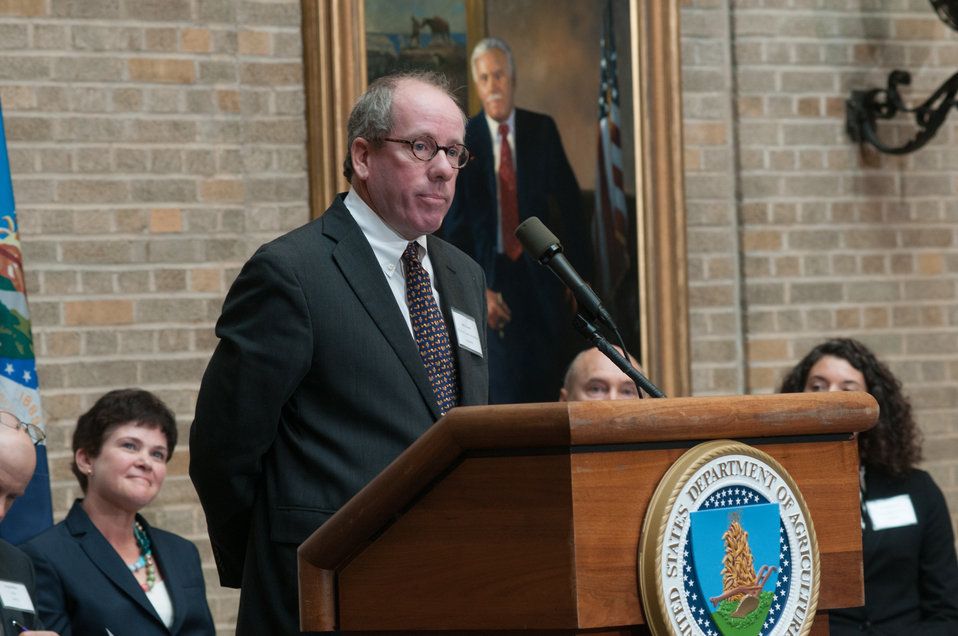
Biomass Power Association President and CEO Bob Cleaves speaks during the U.S. Department of Agriculture (USDA) Wood Energy Memorandum of Understanding, and awarded wood energy grants announcements event, at the USDA Headquarters, in Washington, D.C., on Wednesday, September 11, 2013. Signing the MOU are partnership leaders Biomass Thermal Energy Council, Executive Director Joseph Seymour; Alliance for Green Heat, President John Ackerly, USDA Agriculture Deputy Secretary Krysta Harden; Pellet Fuels Institute Executive, Director Jennifer Hedrick; Biomass Power Association, President and CEO Bob Cleaves, and Secretary Thomas Vilsack who signed it earlier. Moderating the event is Under Secretary for Rural Development Doug O’Brien.
The partnership agreement focuses on promoting wood energy nationwide as a means to address fire risks, bolster rural economic development, improve air quality, and help meet the Obama Administration’s renewable energy and energy efficiency goals. These organizations support the use of wood energy across the scale of users – from residential users, to commercial and intuitional facilities, to industrial production of heat and or electricity to drive businesses and feed the electrical grid.
Under the terms of the five grants announced by Deputy Secretary Harden, private, state and federal organizations will work together to stimulate the development of additional wood energy projects in their states. Collectively, $2.9 million will be spent o this effort -- $1.1 million on federal funds and $1.8 million in non federal funds. For more information o0n the cooperative agreement program, visit na.fs.fed.us.werc/wood-energy/ USDA Photo by Lance Cheung.